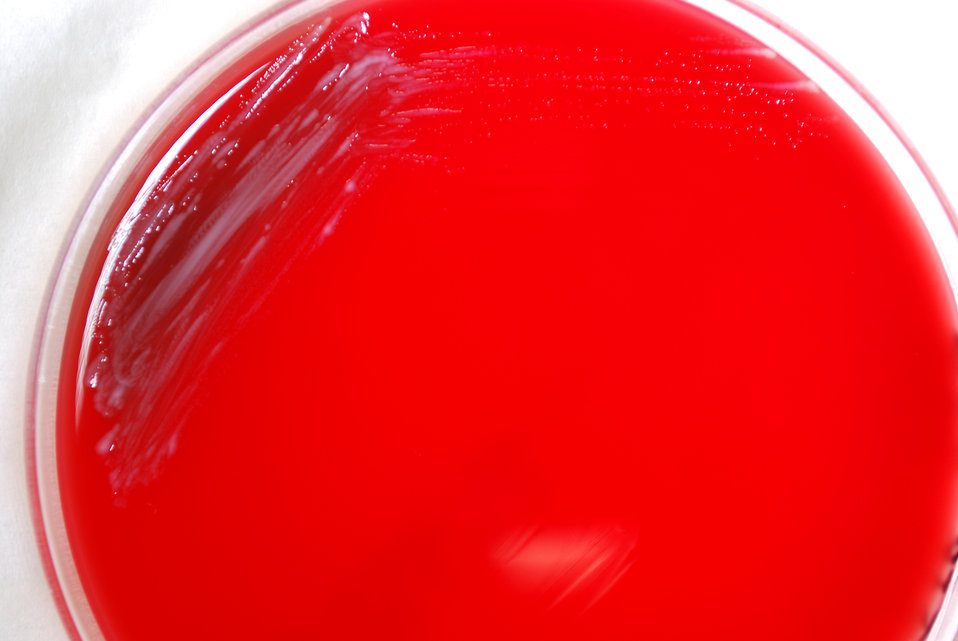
A closer view of PHIL 12209, this photograph depicts the colonial morphology displayed by Gram-negative Yersinia pestis bacteria, which was grown on a medium of sheep's blood agar (SBA), for a 24 hour time period, at a temperature of 37�C.Classification: